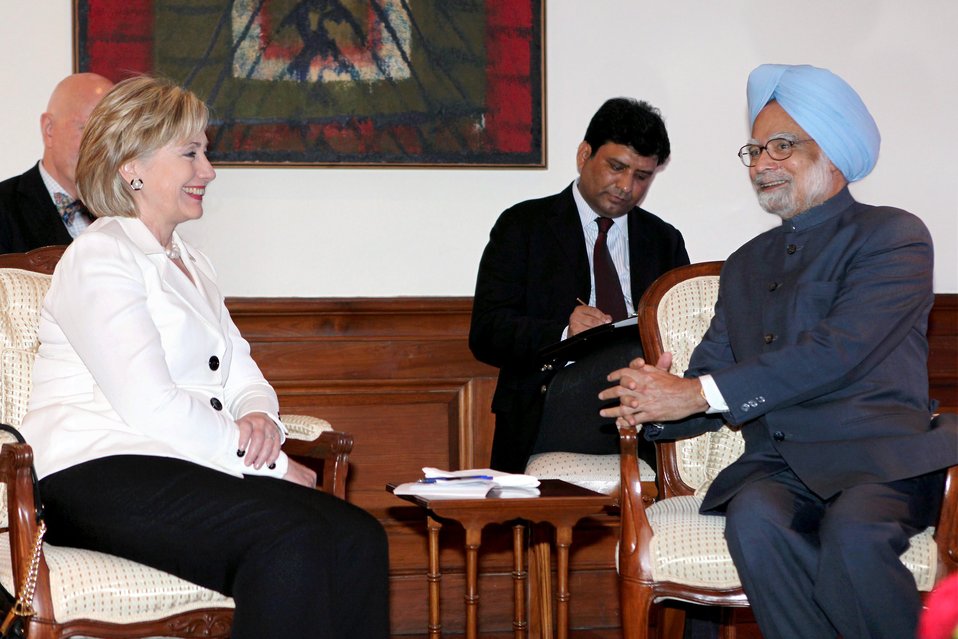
Secretary Clinton Visits Indian Prime Minister

U.S. Secretary of State Hillary Rodham Clinton talks with Indian Prime Minister Manmohan Singh during their meeting in New Delhi, India July 19, 2009.